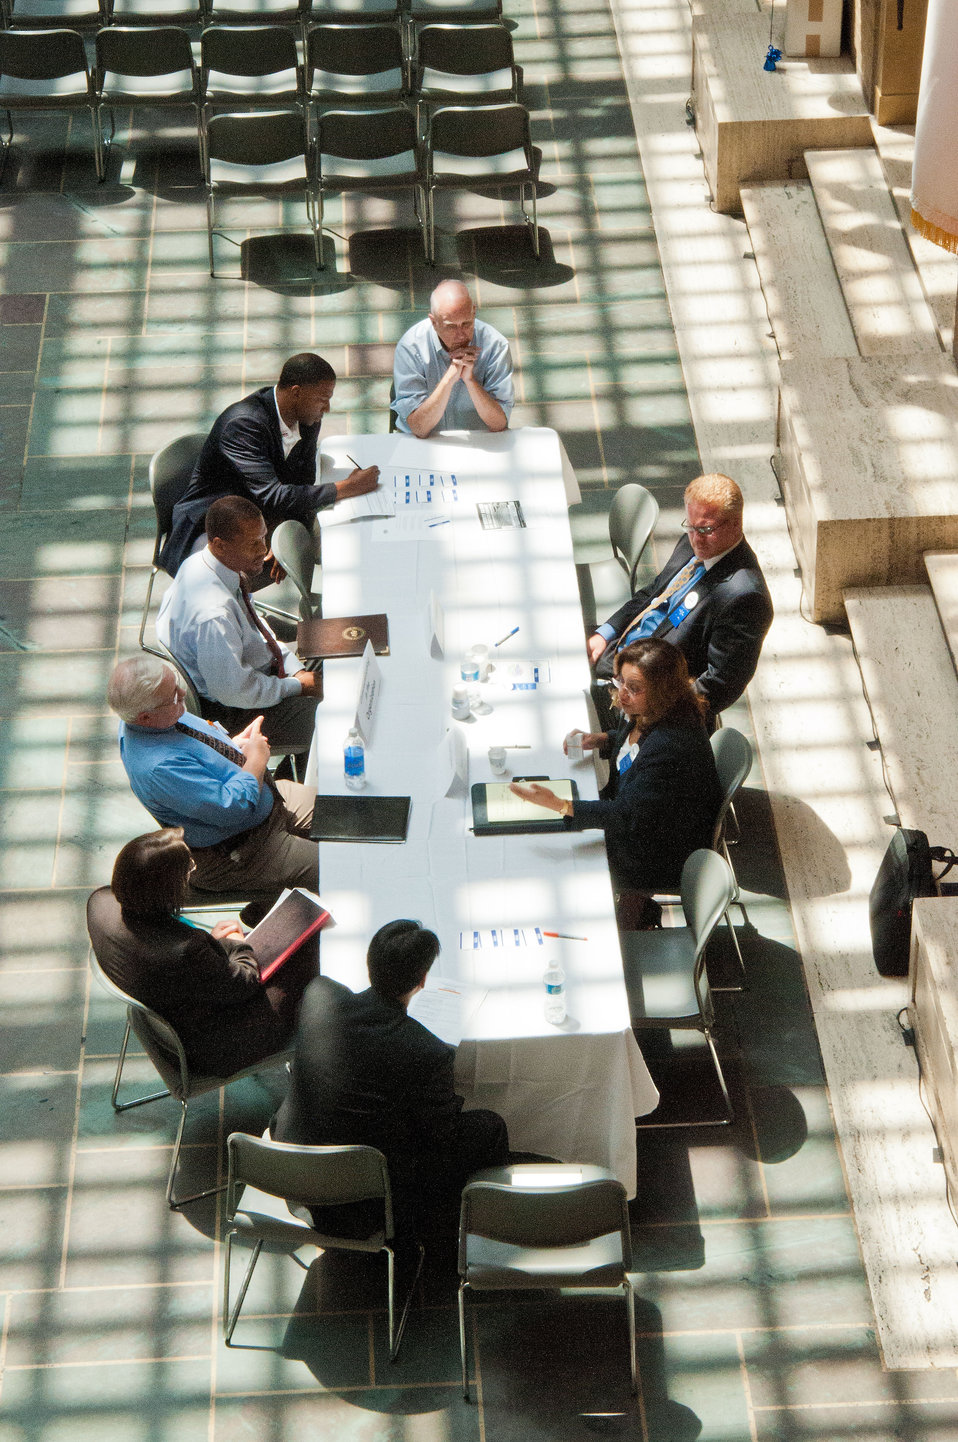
Rob Huttenlocker and Nivin Elgohay discuss Communicating in the Organization during Flash Mentoring Sessions to employees during one of the many forums held for the Rural Development Cultural Transformation Day event held in Washington, D.C. on Thursday, July 12, 2012.